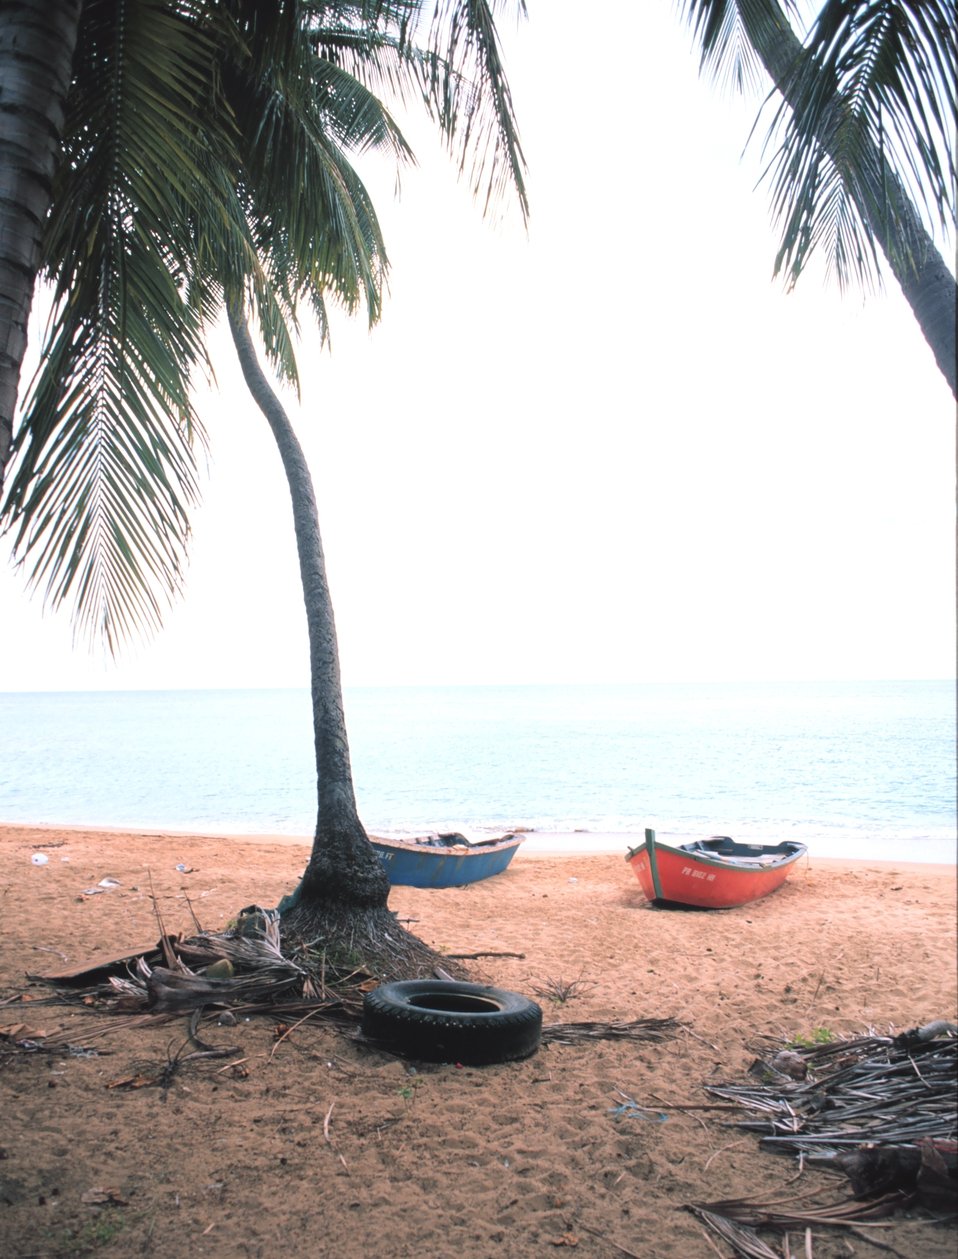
Boats pulled up on the beach at a small-scale fishing port